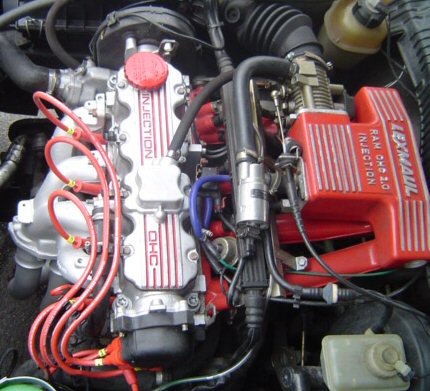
TELVM, myself.